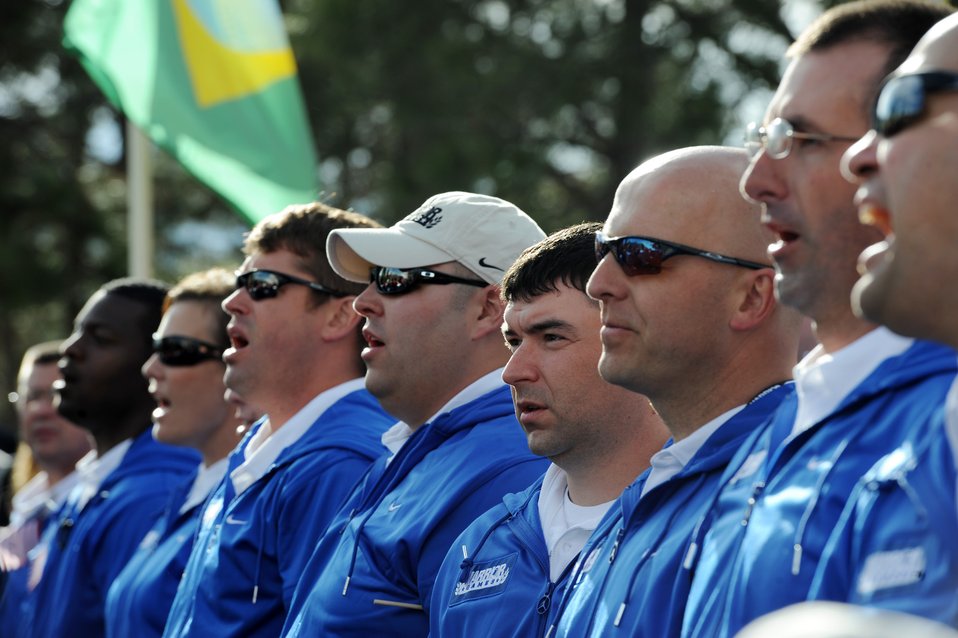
Opening Ceremony

Air Force team members sing the Air Force song during the 2011 Warrior Games opening ceremony May 16, 2011, at the U.S. Olympic Training Center in Colorado Springs, Colo. Some 200 wounded warriors and disabled veterans from all the military services are competing in paralympic-style athletic events May 16 through May 21.